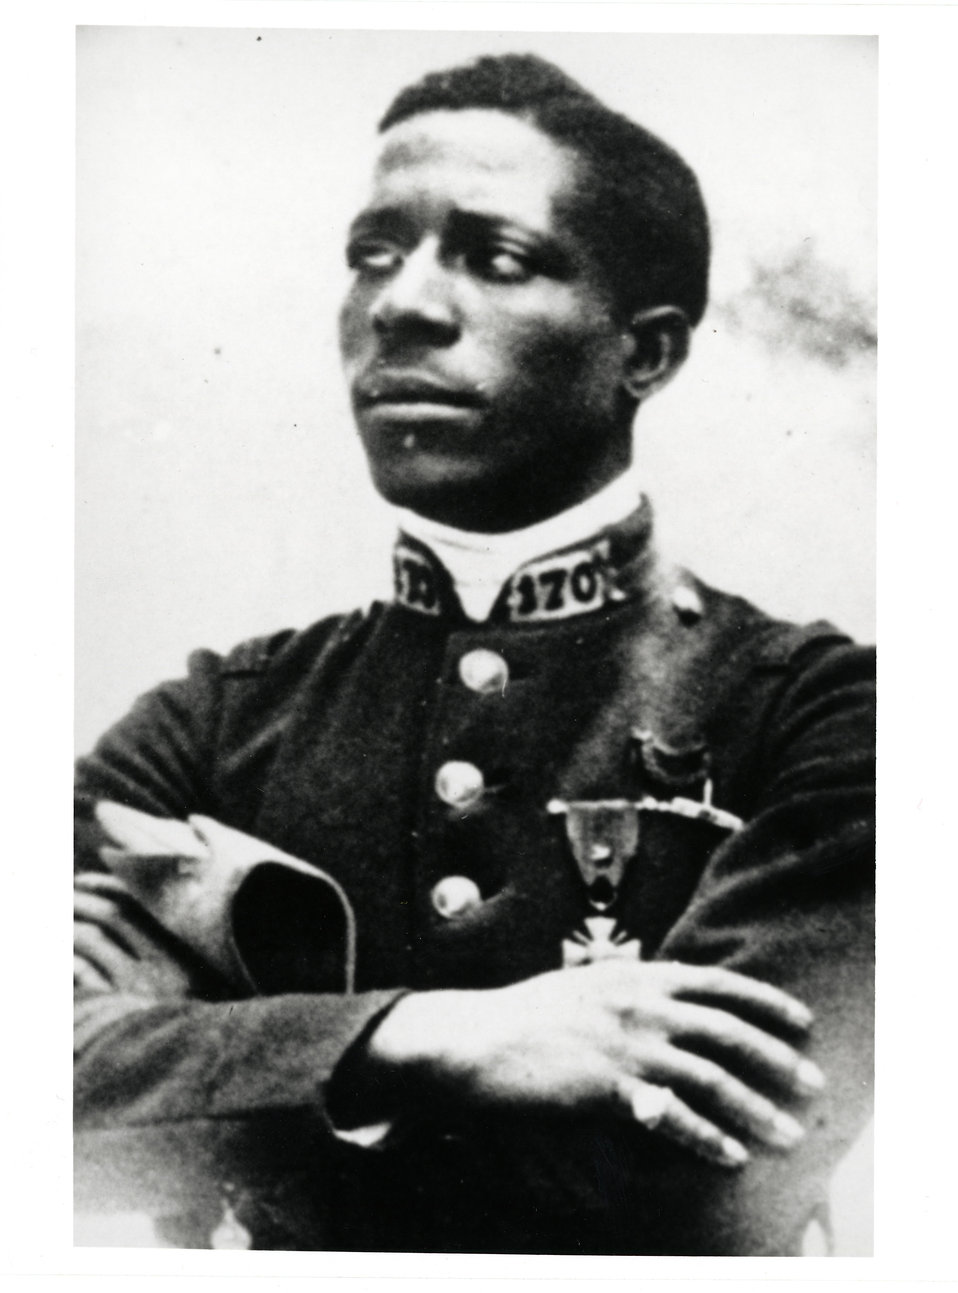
Eugene Bullard was posthumously promoted to first lieutenant in the U.S. Air Force

Eugene Bullard served in the French Foreign Legion and became one of the most decorated soldiers during World War I.